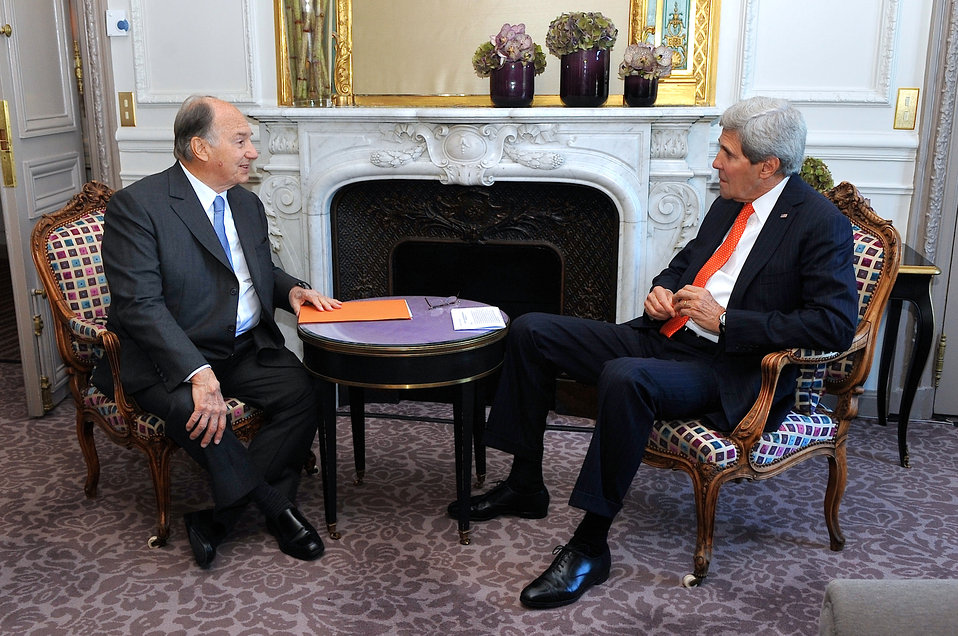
Secretary Kerry Meets With Aga Khan in Paris

U.S. Secretary of State John Kerry holds a one-on-one meeting with Prince Karim al-Hussayni Aga Khan IV, the 49th leader of the Shia Ismaili community, in Paris, France, on June 5, 2014.